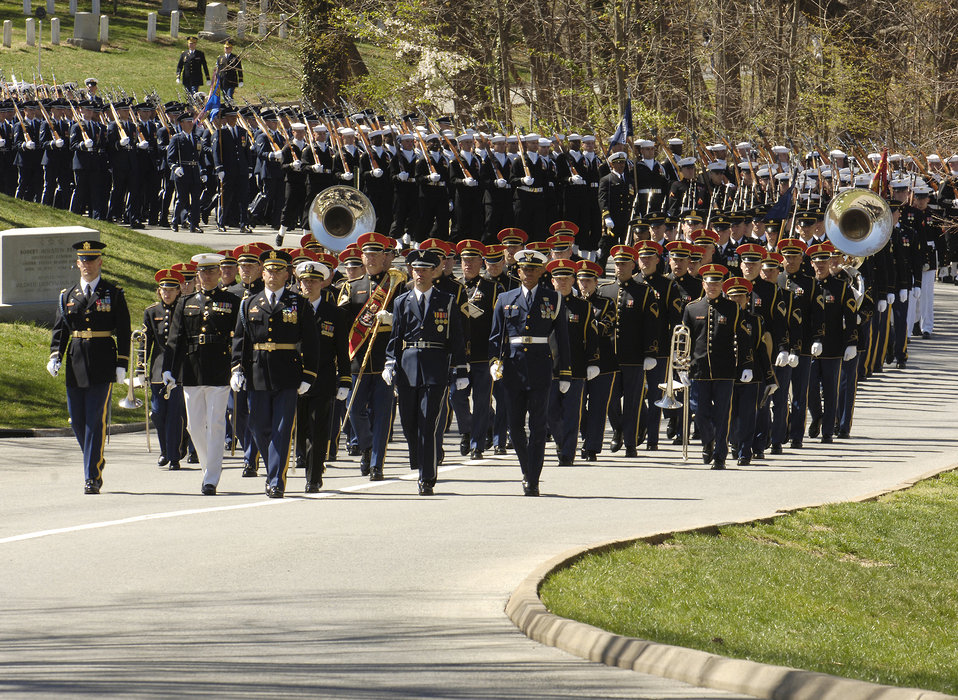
Weinberger tribute

A Joint Service ceremonial guard team escorts the casket containing former Secretary of Defense Caspar Weinberger from a memorial service in the Memorial Chapel to his final place of rest at Arlington National Cemetery, Arlington, Va., April 4, 2006. Secetary Donald H. Rumsfeld delivered remarks during the memorial service.